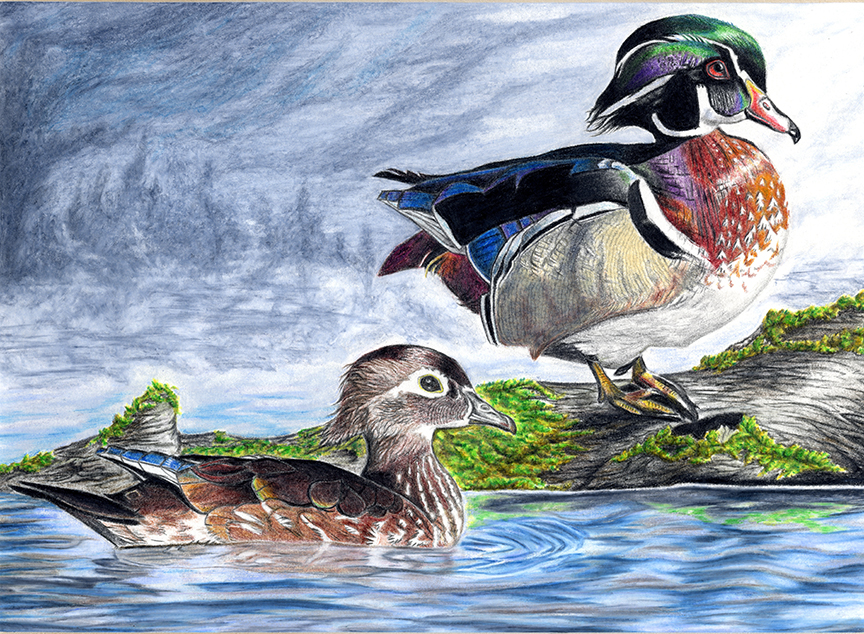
JRDuck2013IA

2013 Junior Duck Stamp Best of Show-Iowa